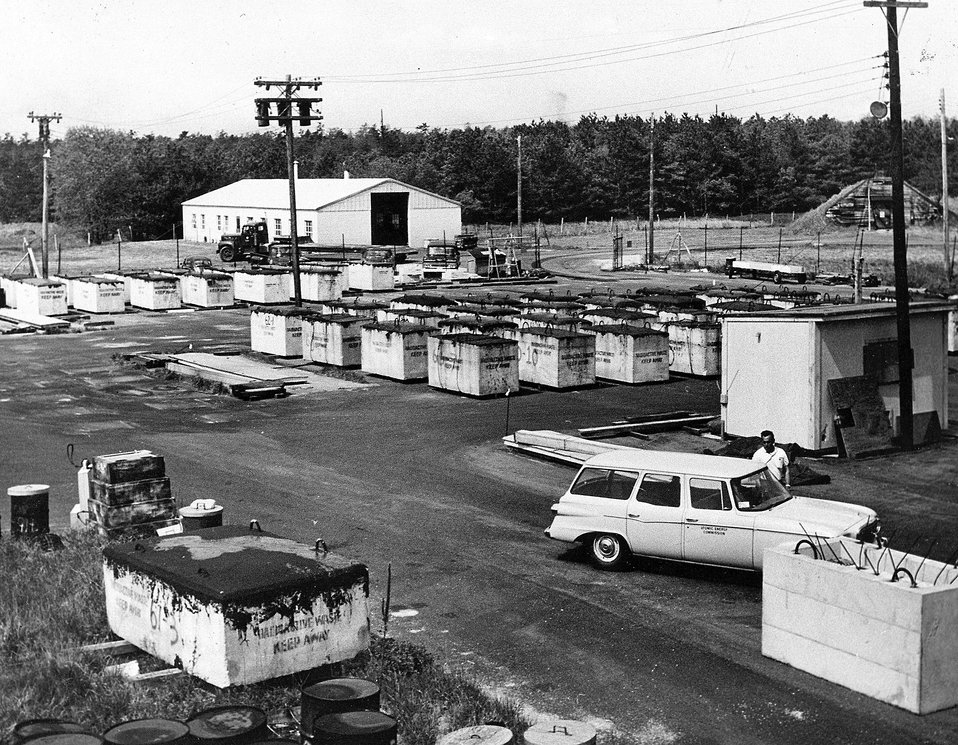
Part of the radioactive wastes storage area at Brookhaven National Laboratory, showing some of the steel-reinforced concrete vaults ready for shipment. c. 1963